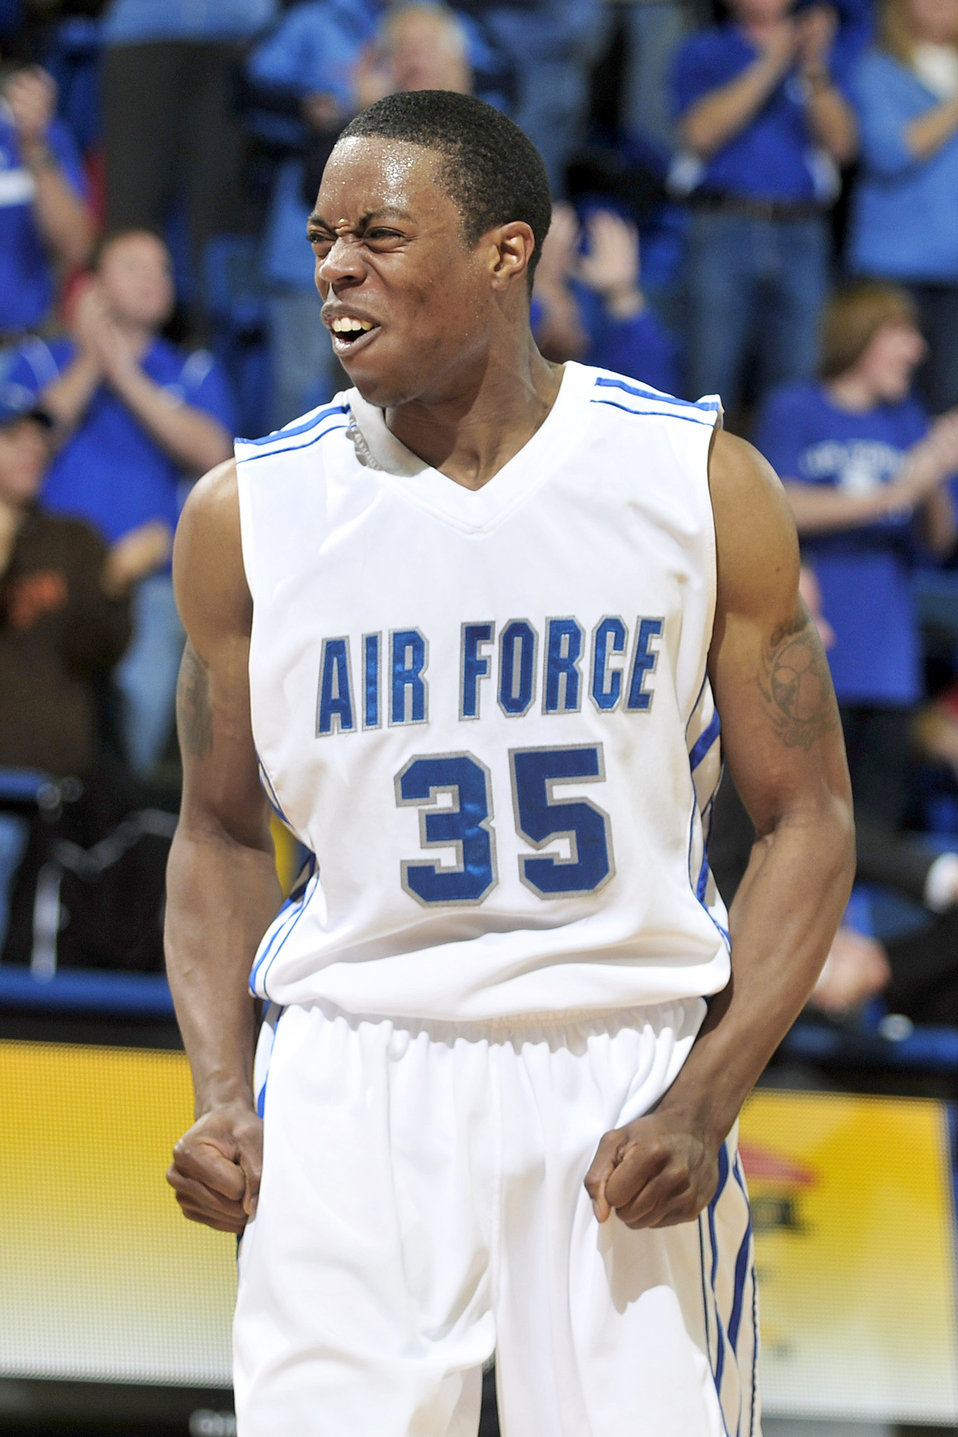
Falcons win home opener

Air Force Academy junior Evan Washington celebrates the Falcons upset victory over Utah during the Falcons Mountain West Conference home opener Jan. 5, 2011, at the Academy's Clune Arena in Colorado Springs, Colo. The Falcons defeated the Utes 77-69.